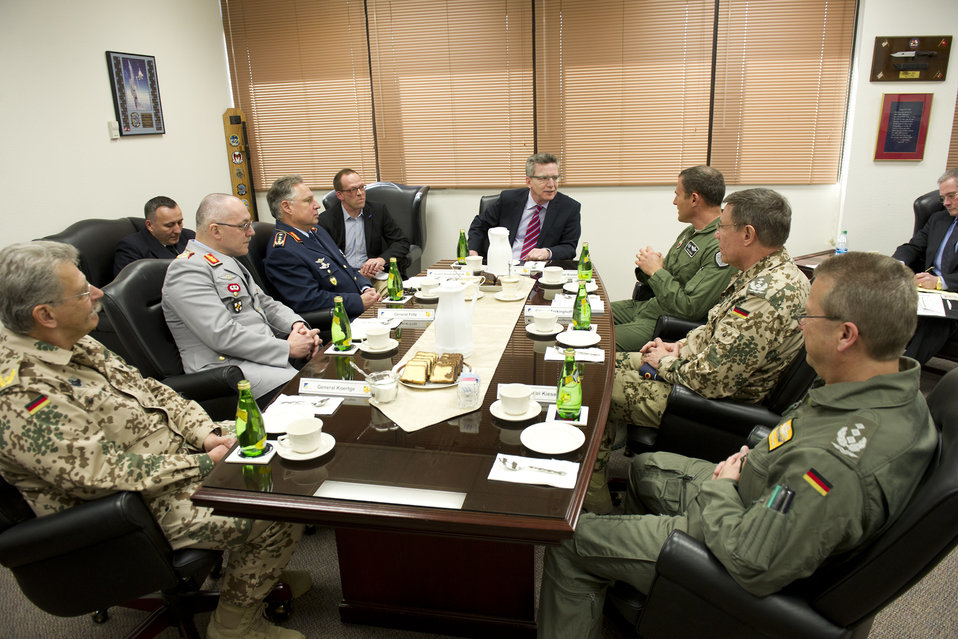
German defense minister visits Holloman AFB

Dr. Thomas de Maiziere (center), the Germany Federal Minister of Defense, meets with U.S. Air Force Col. David Krumm (right of de Maiziere), the 49th Wing commander, and German military officials at Holloman Air Force Base, N.M., Feb. 15, 2012. The minister and 18 German and international media representatives received a first-hand look at the German Air Force Training Center during their visit. The German Air Force began flight training at the base in 1992.